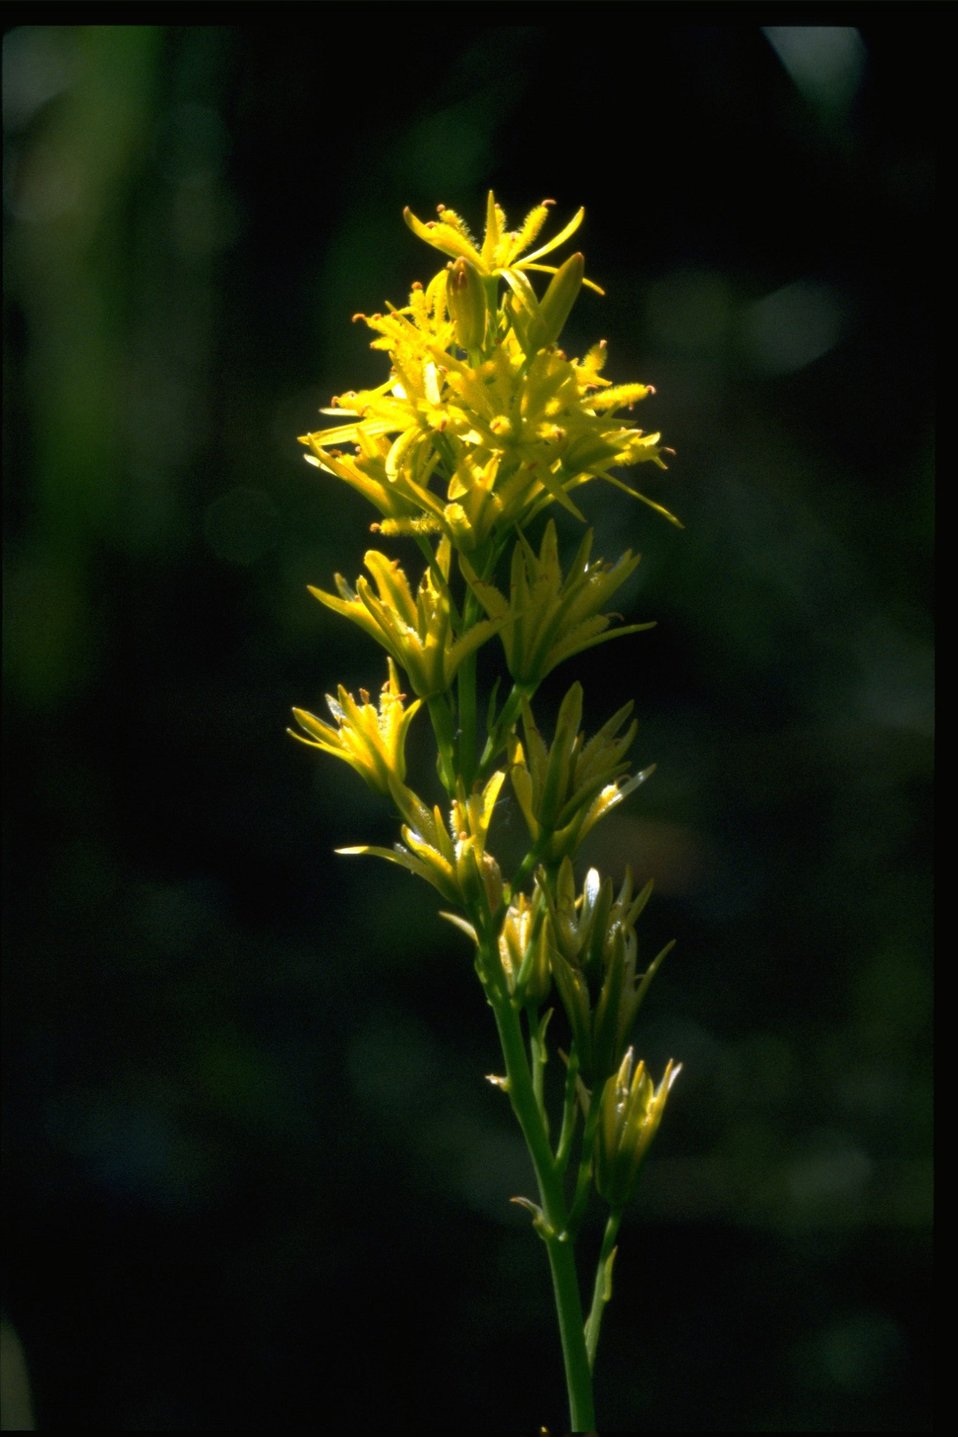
Closeup shot of Northecium californicum.